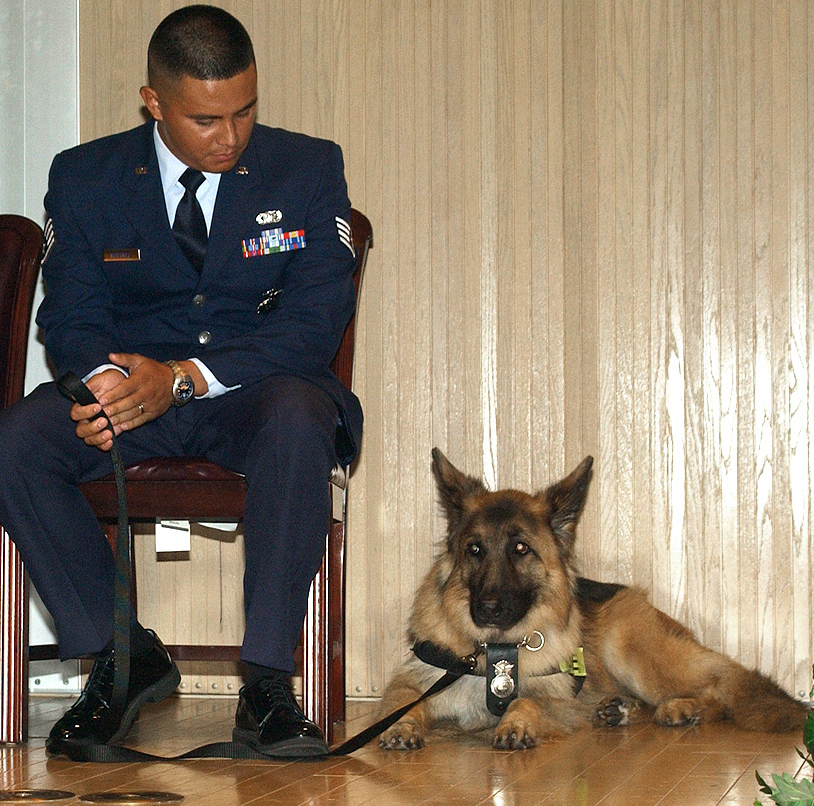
End of a dog's day

SHEPPARD AIR FORCE BASE, Texas (AFPN) -- Staff Sgt. Pablo Martinez looks down at Dolfy, the sergeant's former partner and new family member, during the military working dog's retirement ceremony July 27. Dolfy specialized in explosive detection during his five and a half years of service here.